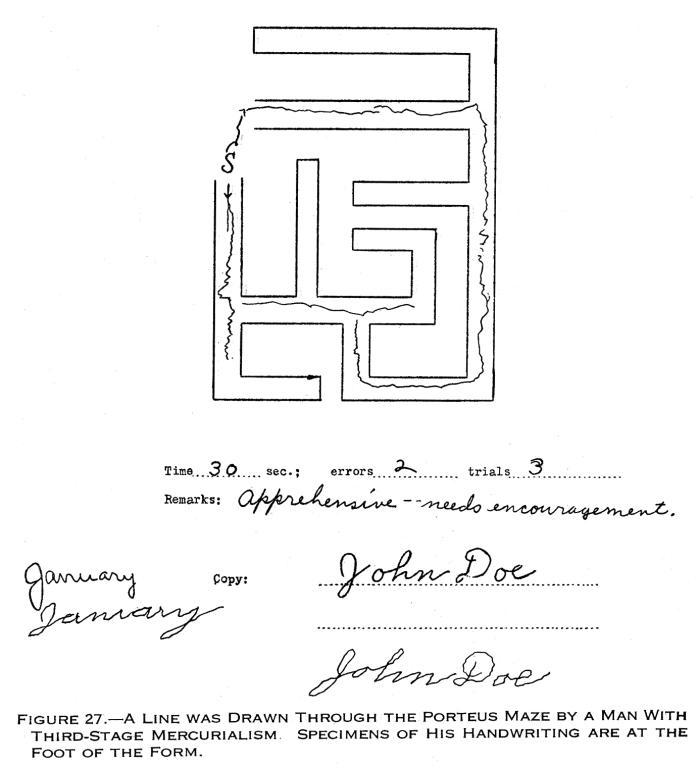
This historical image was provided by the Center for Disease Control's (CDC), National Institute for Occupational Safety and Health (NIOSH). Depicted, was a page from a written medical questionnaire, recorded during a history and physical examination of a fur cutter, who'd been exposed to mercury in a hat manufacturing plant. Fur processing involves the use of mercury in the form of mercury nitrate, which renders the fur suitable for manufacturing hats. If precautions were not taken, such as wearing a filtered breathing mask, or gloves, mercury exposure was quite likely, and could have lead to heavy metal poisoning, with severe pathologic neurological consequences. Due to his exposure to mercury, the diagram illustrated the patient's damaged hand-eye coordination by having him draw a path through a Porteus maze. The image was published in the 'Public Health Bulletin', No. 263, Fig. 27, 1941.